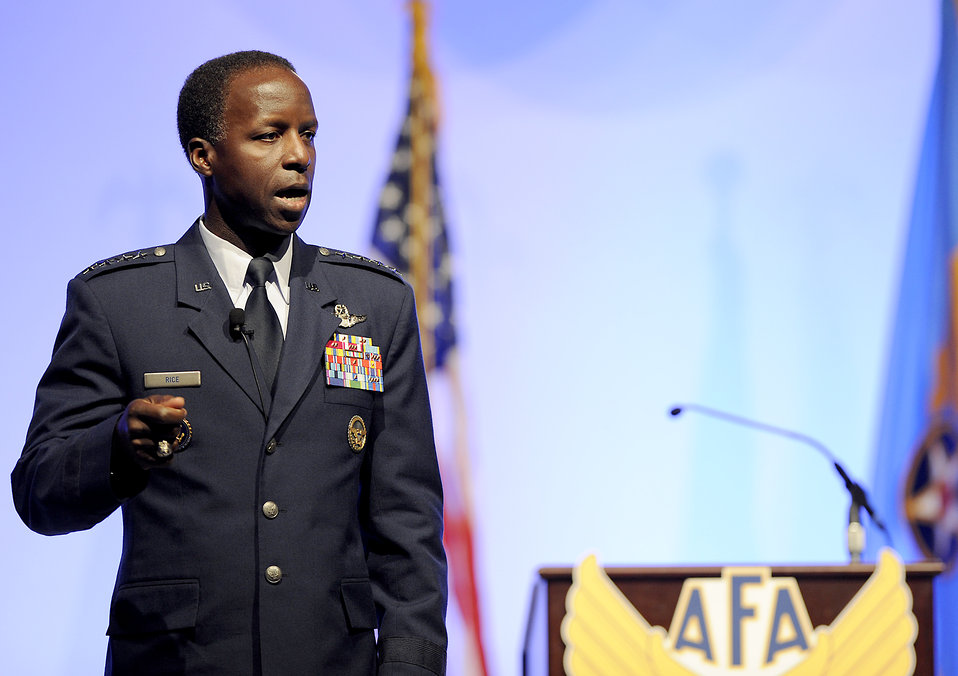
AETC commander: Air Force staying ahead of learning curve

Gen. Edward A. Rice Jr., the commander of Air Education and Training Command, addresses Airmen and defense industry professionals about the future of Air Force learning at the Air Force Association's 2012 Air Warfare Symposium in Orlando, Fla., Feb. 23, 2012.